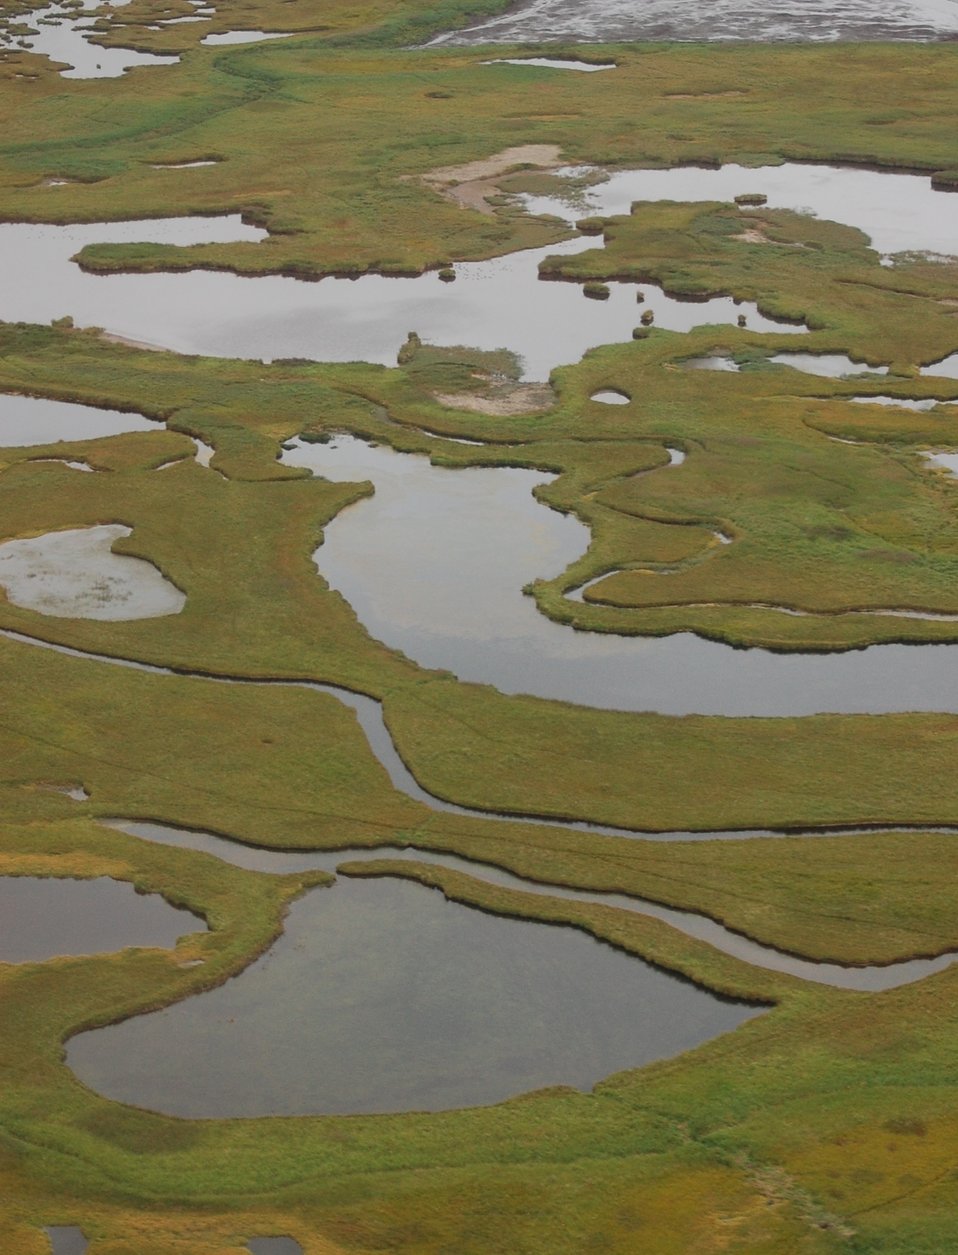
Izembek wetlands

Izembek National Wildlife Refuge